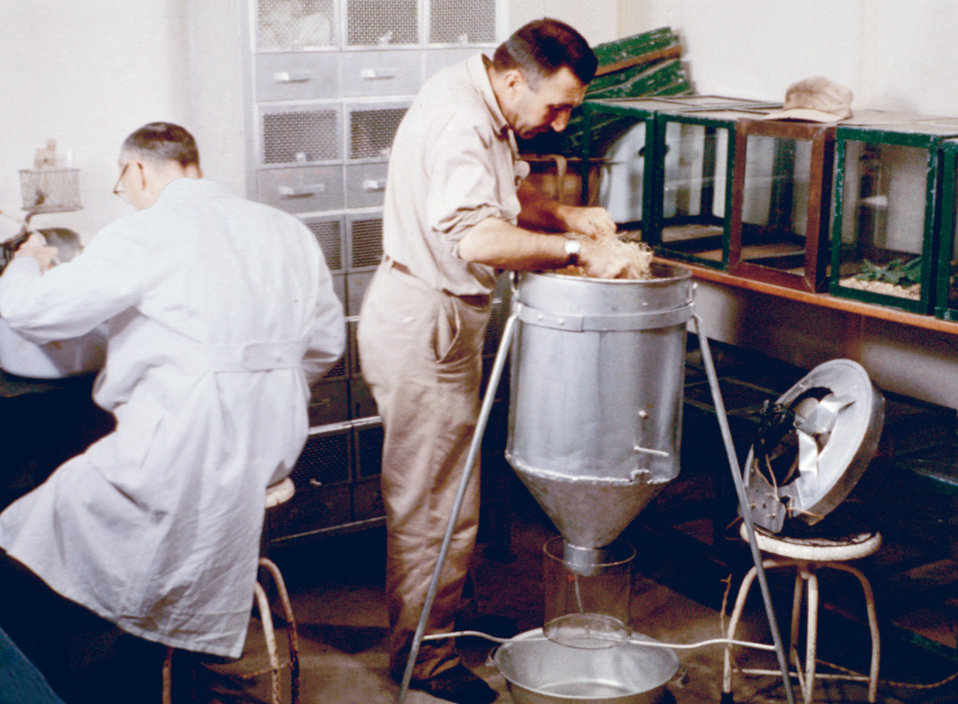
Flea collection techniques practiced during a 1961 San Francisco Plague Study.